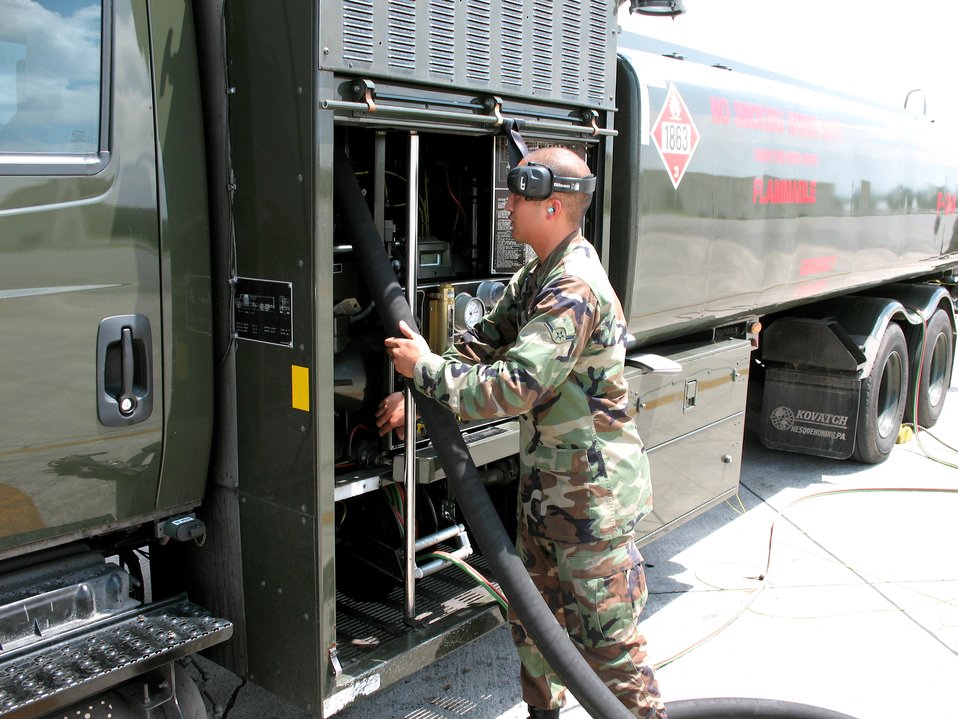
F-22s use refueling 'pit stop'

Amn Amery Caoili prepares the fuel hose before F-22 Raptors pull in for gas during hot pit operations at Kadena Air Base, Japan. Hot pits allow fighters to be refueled in a fraction of the time it would take if the aircraft had to be shut off and parked during a normal turn time. Airman Caoili is a fuels distribution operator with 18th Logistics Readiness Squadron.